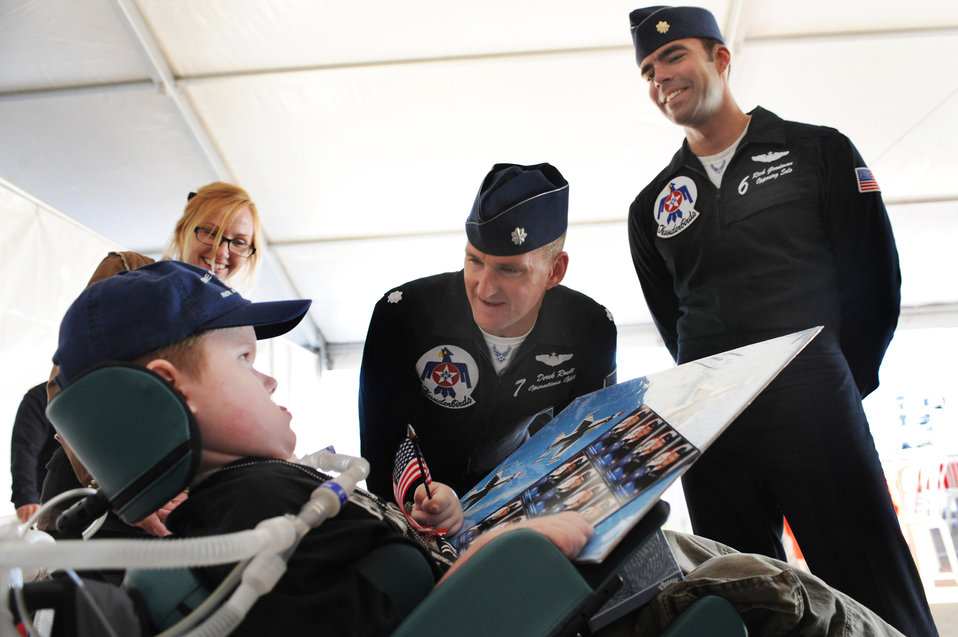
Thunderbirds close air show season

Matt Dembik Jr., a nine-year-old diagnosed with spinal muscular atrophy, gets an autograph from Thunderbirds operations officer Lt. Col. Derek Routt and solo pilot Maj. Rick Goodman during the rehearsal show for the Nellis Air Force Base, Nev., Open House Nov. 13, 2009. Matt was invited to attend the rehearsal through the Make-a-Wish Foundation, a non-profit organization aimed toward granting wishes of children with life-threatening conditions.